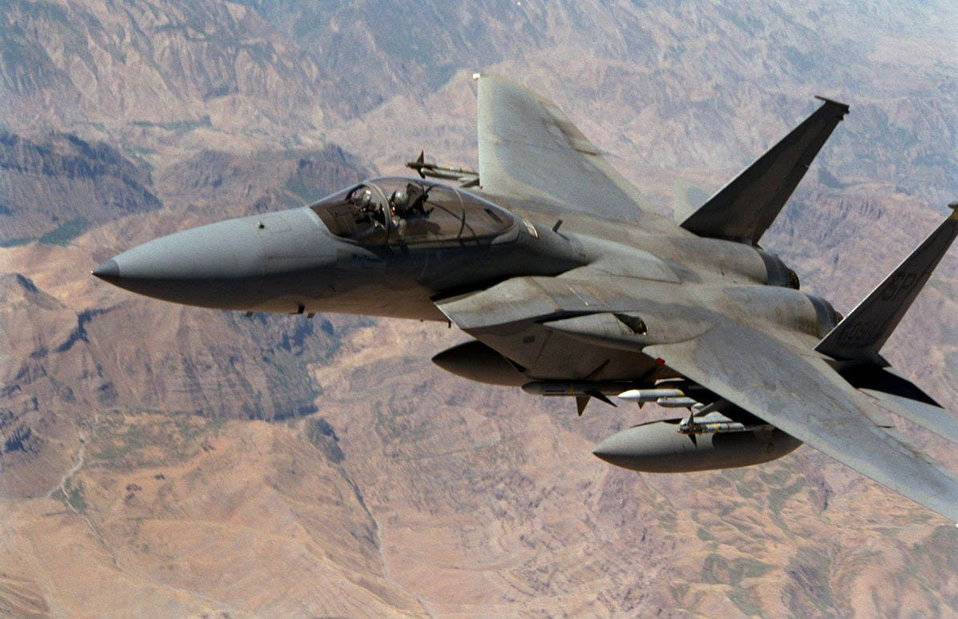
Eagle flight

FILE PHOTO -- An F-15 Eagle enforces the Northern no-fly zones over Northern Iraq.